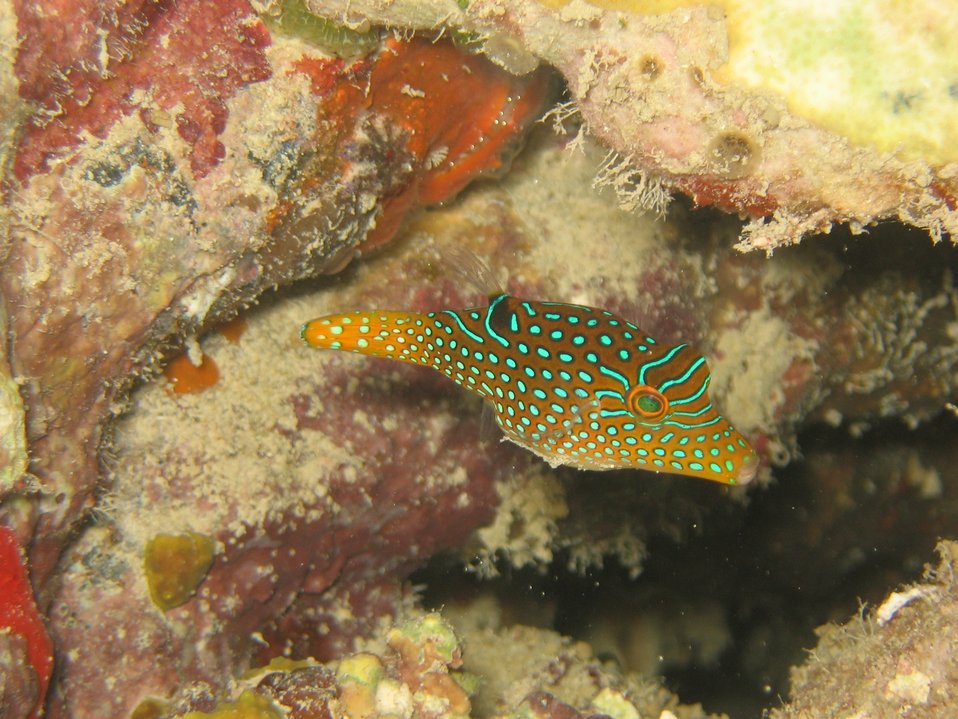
Papuan toby, also known as sharpnose pufferfish, (Canthigaster papua).